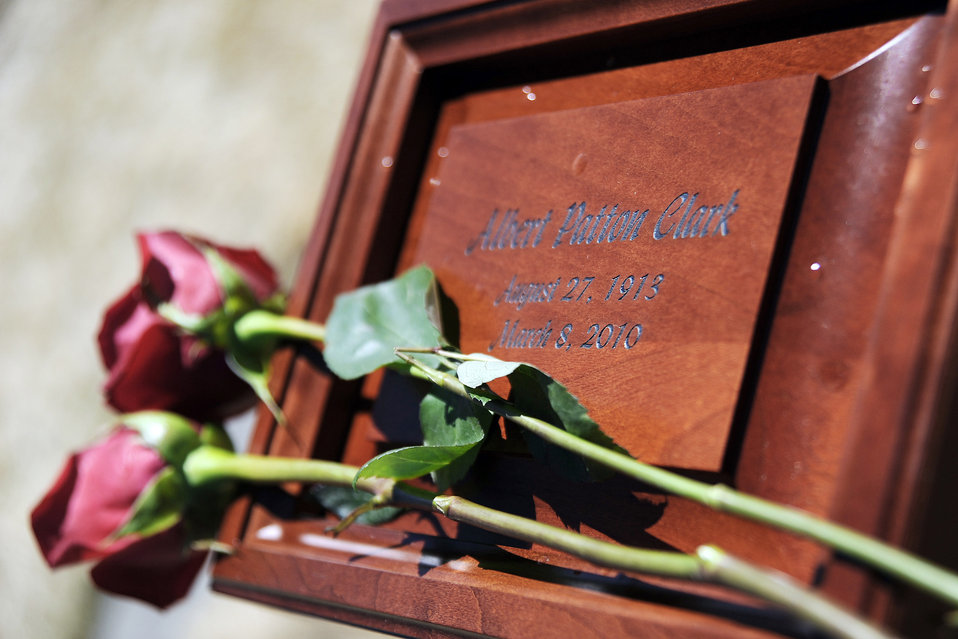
General Clark honored with service

Roses placed by family members honor the remains of Lt. Gen. Albert P. Clark, who died March 8, 2010, in Colorado Springs, Colo. General Clark, who was the Academy's sixth superintendent from Aug. 1, 1970 to July 31, 1974, was a 1936 graduate of West Point and went on to a flying career after graduation. He spent 33 months as a prisoner of war after getting shot down flying a British Spitfire over Abbeville, France, in July 1942. General Clark was buried in the Air Force Academy Cemetery March 17.